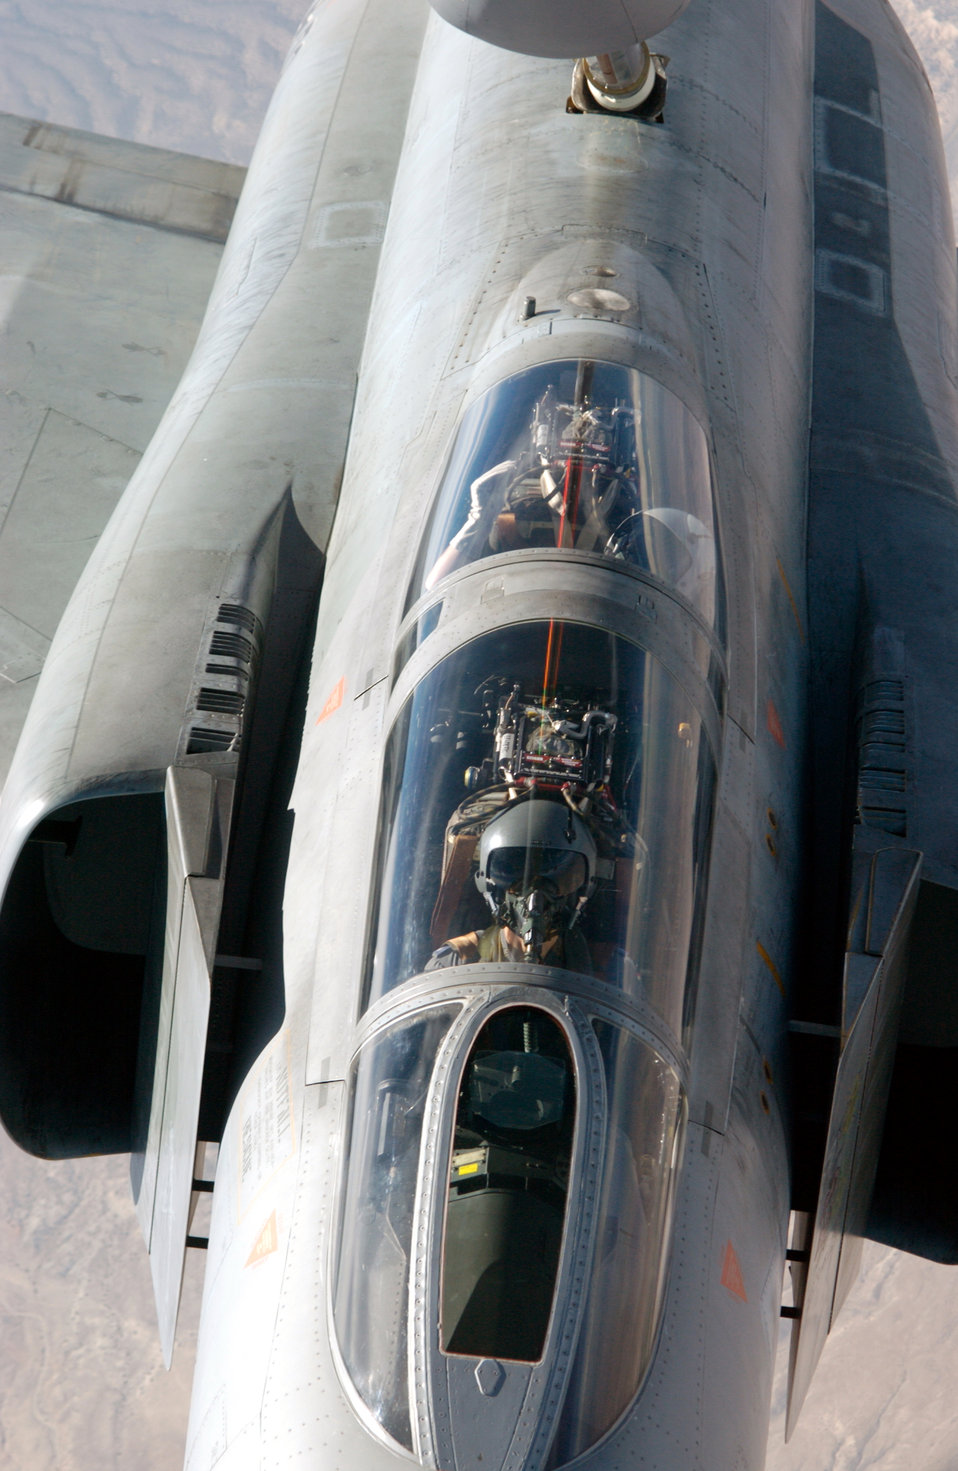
Flying Phantom

NELLIS AIR FORCE BASE, Nev. -- An F-4 Phantom II from the German Weapons School, Holloman Air Force Base, N.M., refuels during a mission June 4. The aircraft is participating in the U.S. Air Force Weapon School Mission Employment Exercise. The exercise tests the skills students learned during several months of training.